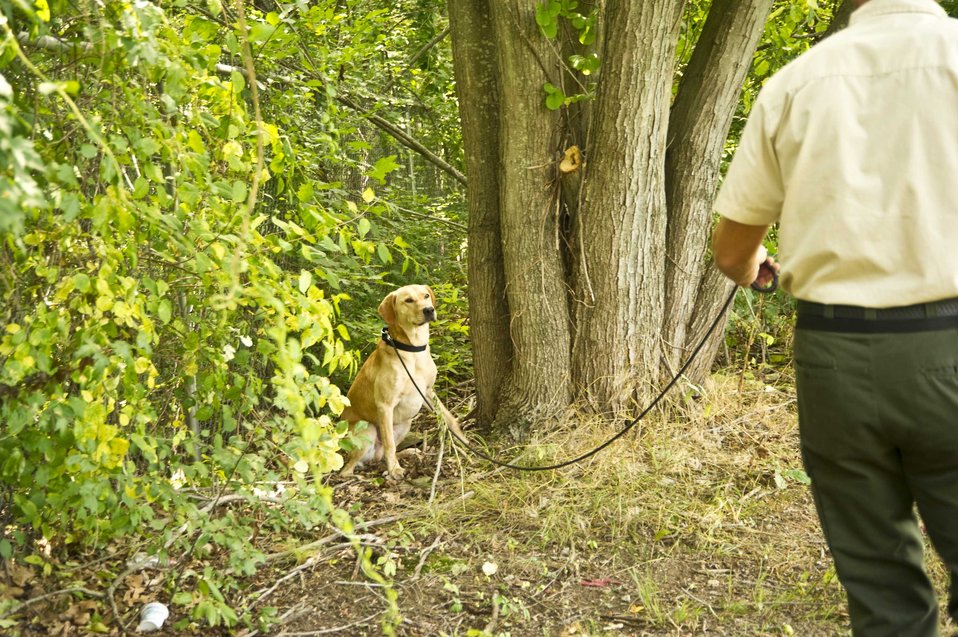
U.S. Department of Agriculture (USDA) Asian Longhorned Beetle (ALB) Detector Dog RJ participates in a feasibility study to detect the presence of the invasive beetle in Worcester, MA on Aug. 1, 2012. The ALB is an invasive insect that is killing trees in Massachusetts, New York, New Jersey and Ohio. Four dogs are currently being trained to recognize beetle “frass” or excrement that the beetle leaves behind. This study is part of an important mission to protect neighborhood trees and this country’s valuable forest resources from this harmful pest.